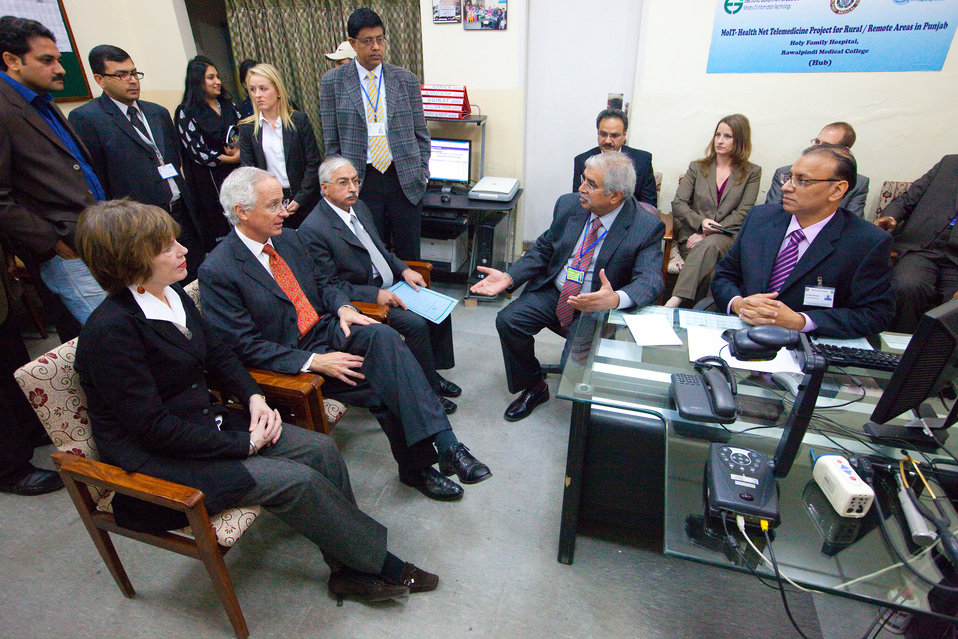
Telemedicine

Rawalpindi, January 5, 2012 – Ambassador Cameron Munter and his wife Dr. Marilyn Wyatt with Dr. Asif Zafar Malik, Project Director Telemedicine/ training at Holy Family Hospital in Rawalpindi

For more information on the U.S. assistance to Pakistan, Visit USAID Pakistan website:
pakistan.usaid.gov

Check our videos on USAID Pakistan YouTube page: